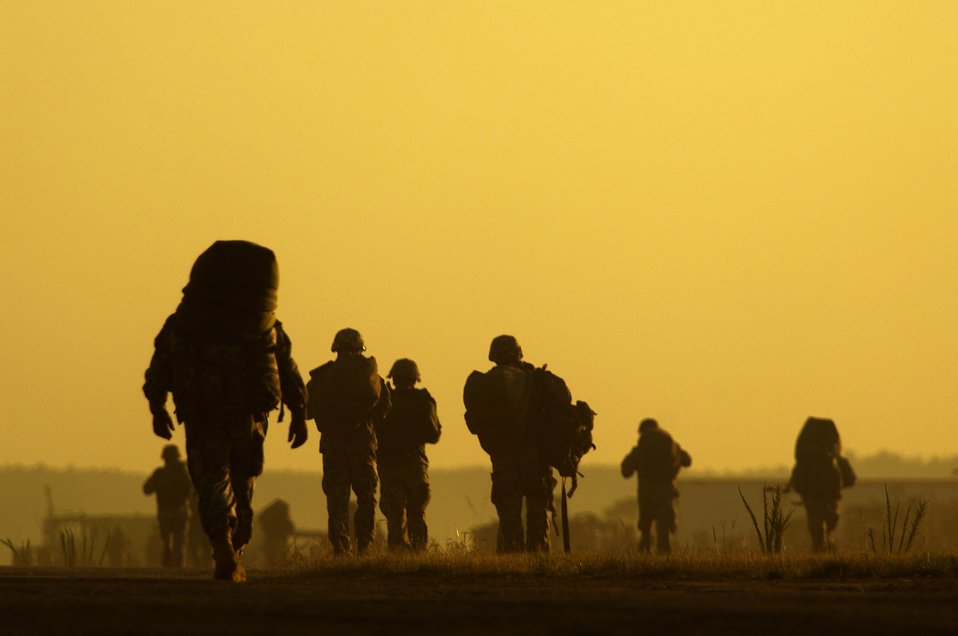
Hercules, Globemaster IIIs support joint training

Paratroopers from the 82nd Airborne Division move toward a rally point after jumping from a C-17 Globemaster III during Joint Forcible Entry Exercise June 18 at Fort Bragg, N.C. The exercise is a joint airdrop exercise designed to enhance service cohesiveness between Army and Air Force members, allowing both services an opportunity to properly execute large-scale heavy equipment and troop movement.